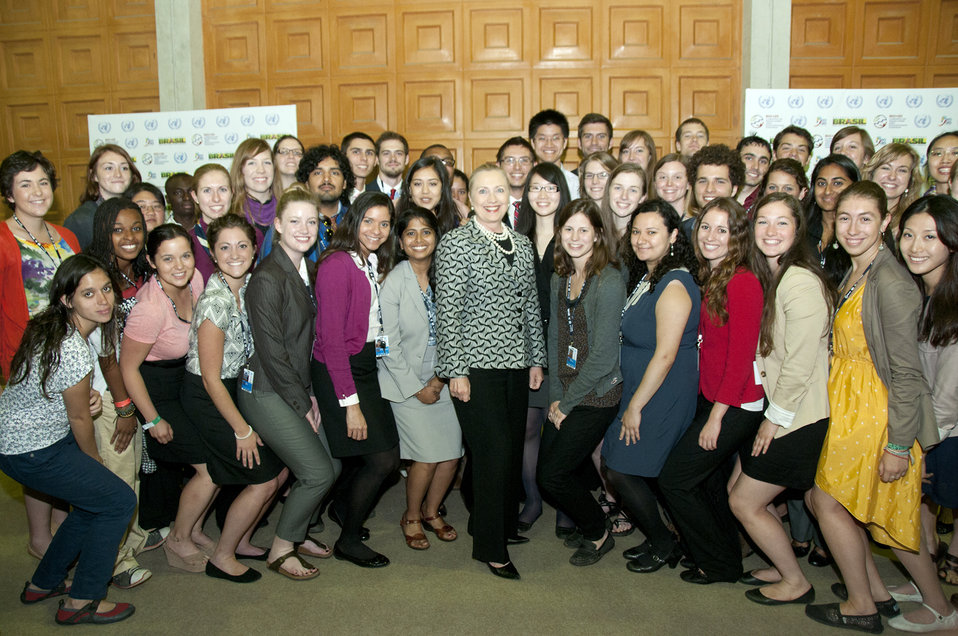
Secretary Clinton Poses for a Photo With SustainUS Youth Members

U.S. Secretary of State Hillary Rodham Clinton poses for a photo with SustainUS youth members in Rio de Janeiro, Brazil during the Rio 20 Conference on June 22, 2012.